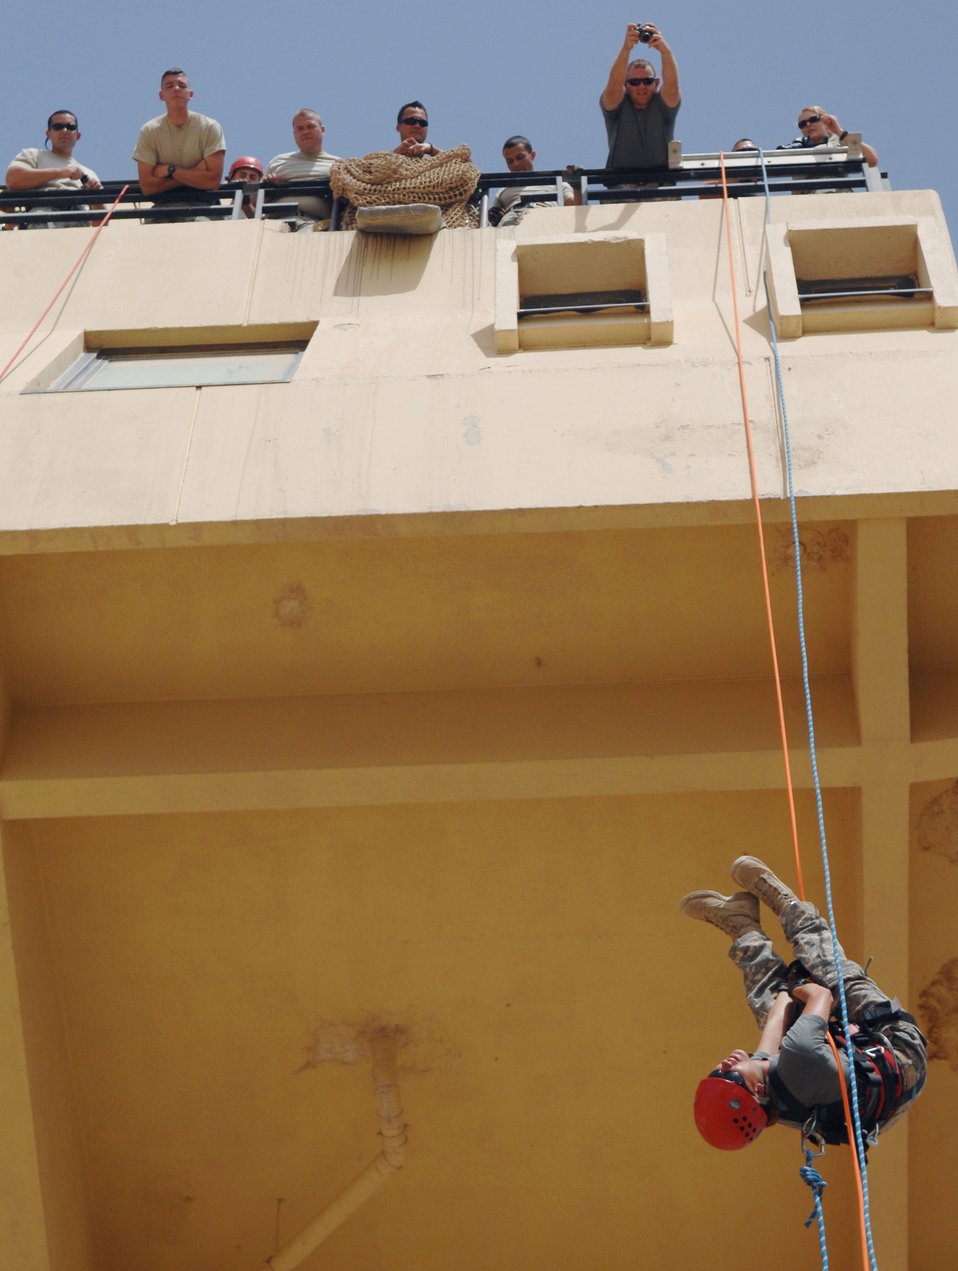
Balad firefighters rappel tower

Army Sgt. Megan Payton, a firefighter with the 23rd Ordnance Company, uses the inverted technique as she rappels down the side of the control tower at Joint Base Balad, Iraq, Aug. 20, 2009. The firefighters used the training to practice knots, anchors and belay techniques.